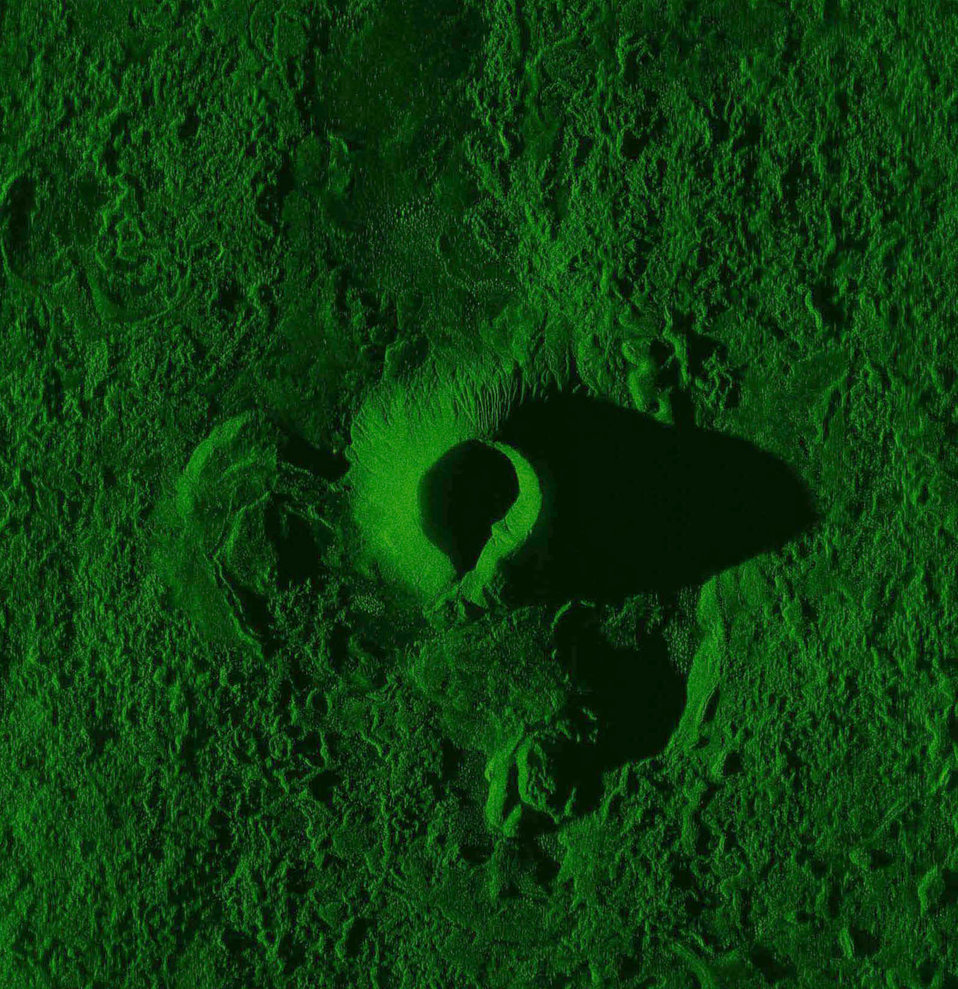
ESC radar program

This image of an extinct volcano crater in southern California was taken during system level verification test flights of the Block 40 Global Hawk Multi-Platform Radar Technology Insertion Program sensor on the Proteus surrogate aircraft. It shows the radar's ability to show terrain features in high detail.